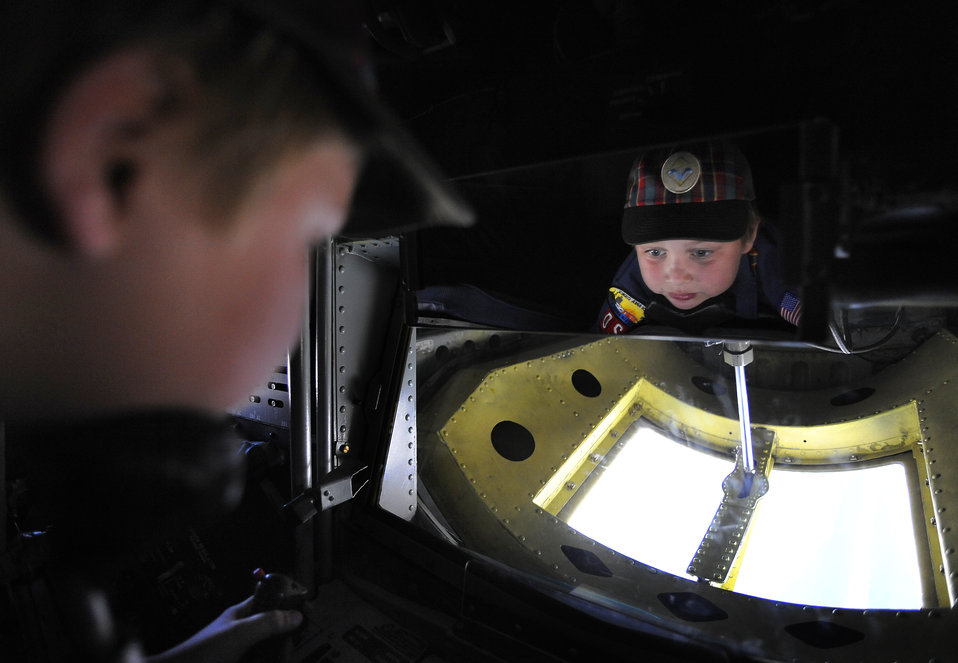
Aerospace exhibition entertains, informs during Air Force Week Los Angeles

Dominik Goldschmidt, 9, a cub scout from Pack 120, Long Beach, Calif., gets hands-on interaction Nov. 15 in the boom pod of a KC-135 Stratotanker at the Wings Over Long Beach Air Expo for Air Force Week Los Angeles.